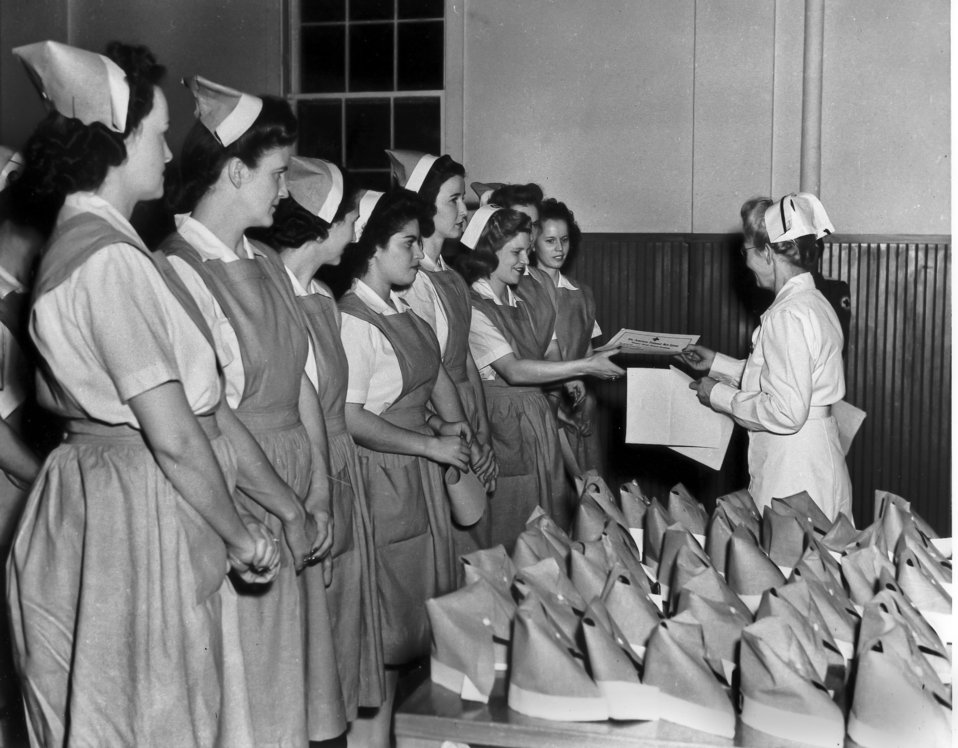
Nurse Graduation Class Oak Ridge

Pro 175 DOE photo by Ed Westcott 12/7/44 Oak Ridge Tennessee